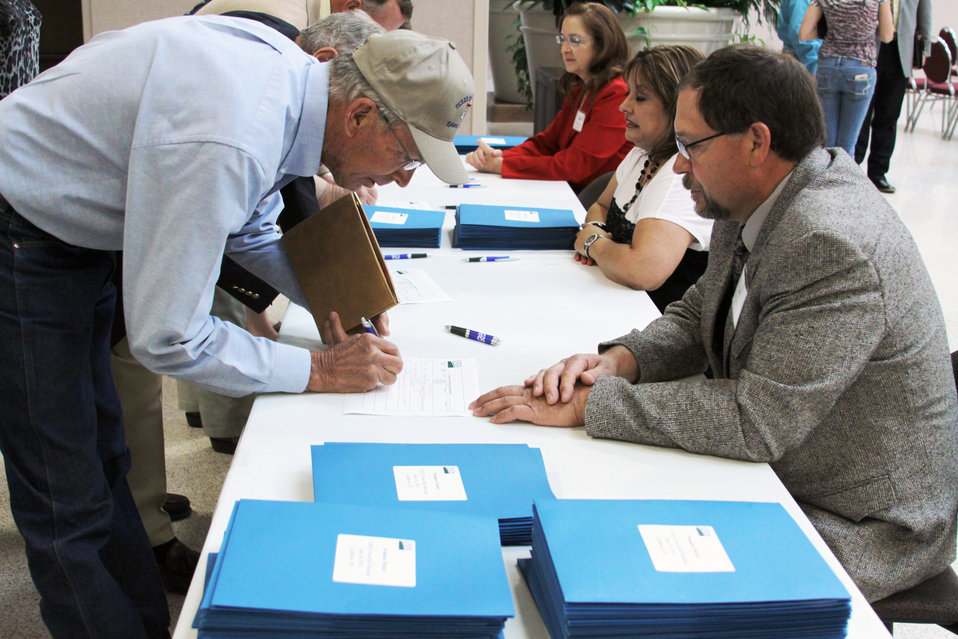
Agriculture leaders sign in for the town hall meeting hosted by Agriculture Secretary Tom Vilsack at Texas Tech University in Lubbock, TX on Friday, Jun. 14, 2013. Secretary Vilsack discussed the need for Congressional action on a Food, Farm and Jobs Bill, as well as a solution to fix America's broken immigration system.